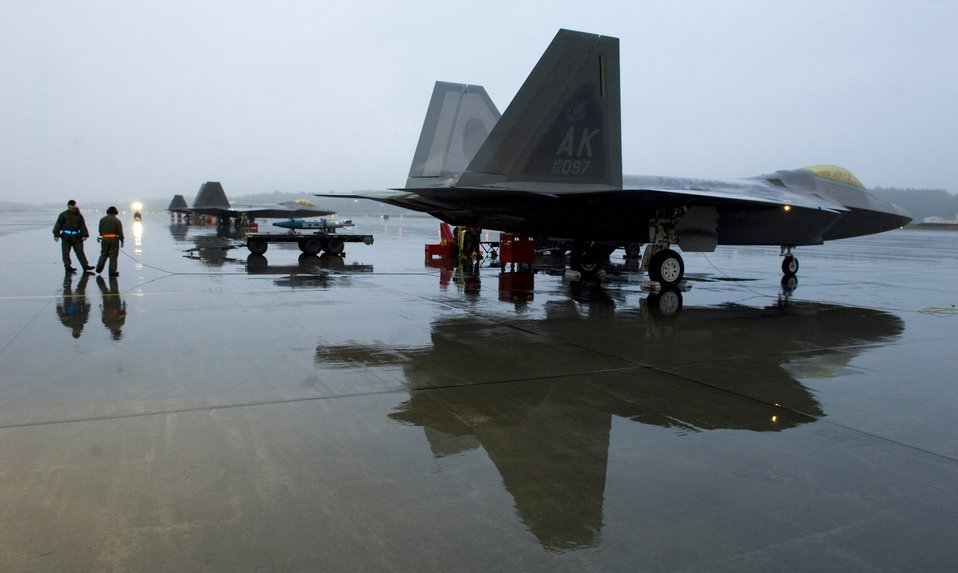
Flying in the rain

Crew chiefs from the 90th Aircraft Maintenance Unit at Elmendorf Air Force Base, Alaska, prepare to launch an F-22 Raptor Sept. 19.